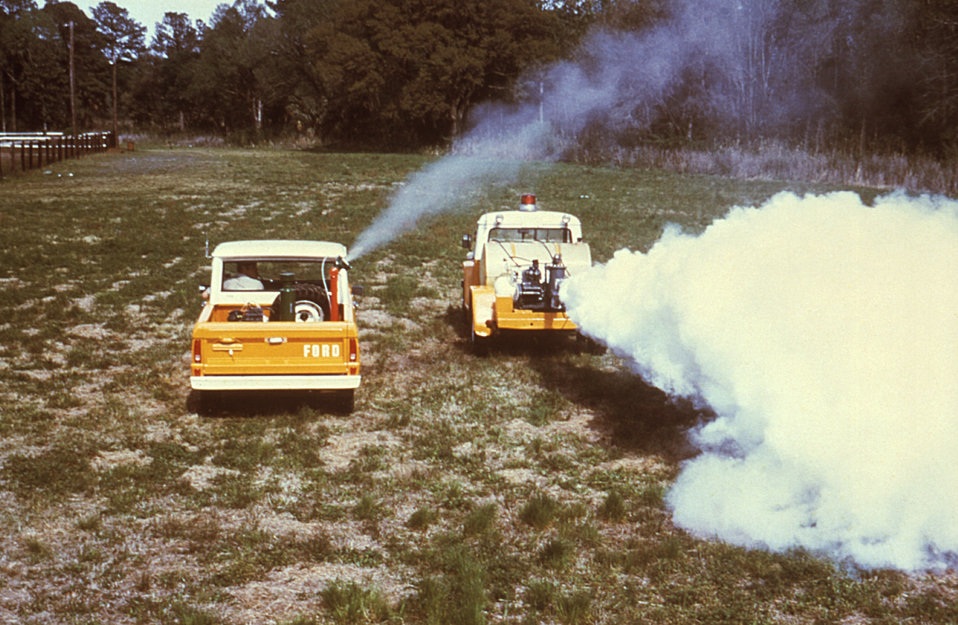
This 1981 image depicts a demonstration of two fog generators, an ultra-low volume (ULV) generator (Lt), and a thermal fog generator (Rt).